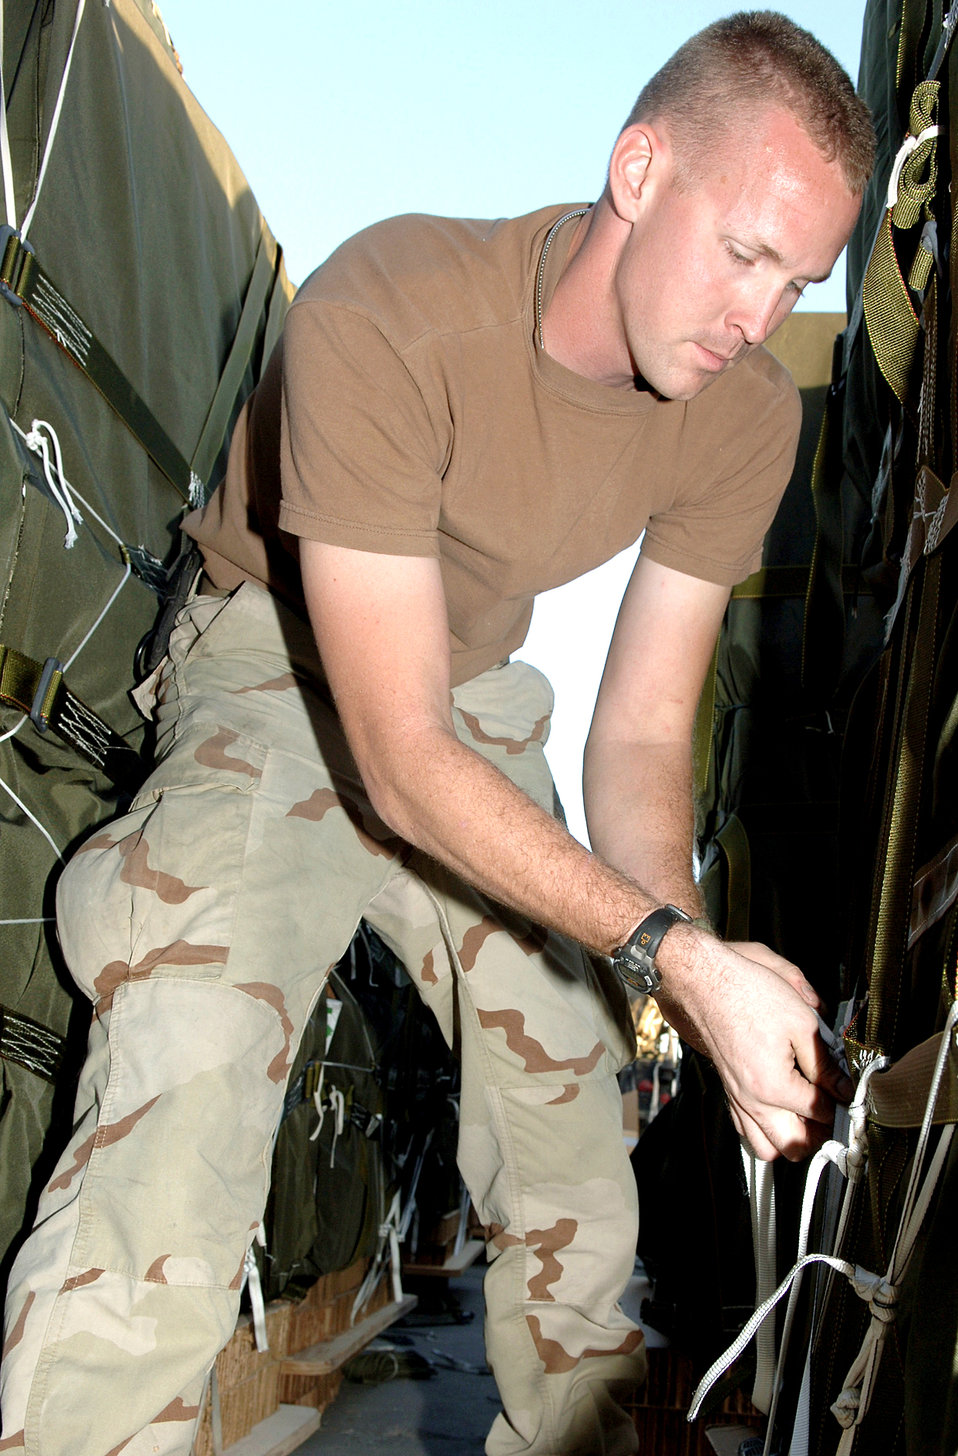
Pakistan support

BAGRAM AIR FIELD, Afghanistan (AFPN) -- Senior Airman Michael Gray, a C-130 Hercules crew chief, secures a skid board tie on a containerized delivery system on the flightline here. In their free time, Airmen and Navy EA-6 Intruder maintainers help Army riggers here from Fort Bragg, N.C., build the delivery systems to support the multinational humanitarian assistance aid to the victims of the earthquake that struck Pakistan Oct. 8. Airman Gray, from Slidell, La., is deployed here from Davis-Monthan Air Force Base, Ariz.